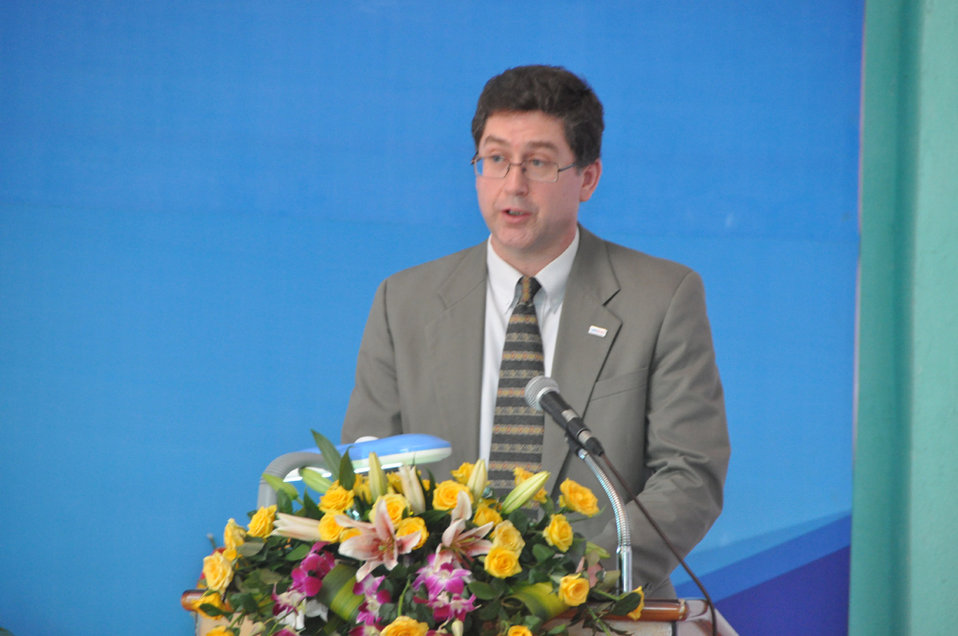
Co-pay Methadone Treatment Center Opens in Hai Phong on June 18, 2011

Jonathan Ross, director of USAID/Vietnam's Office of Public Health, delivers remarks.